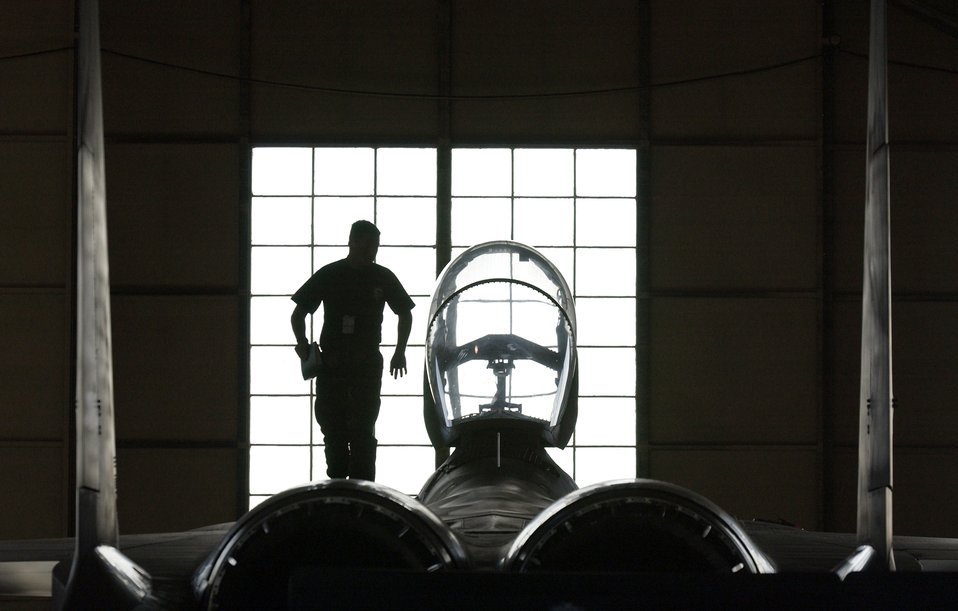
Load inspection

NELLIS AIR FORCE BASE, Nev. -- Senior Airman Jordan Lewis performs a post-weapons load inspection here Jan. 26 on an F-15 Eagle. Airman Lewis is a weapons loader with the 57th Aircraft Maintenance Squadron.